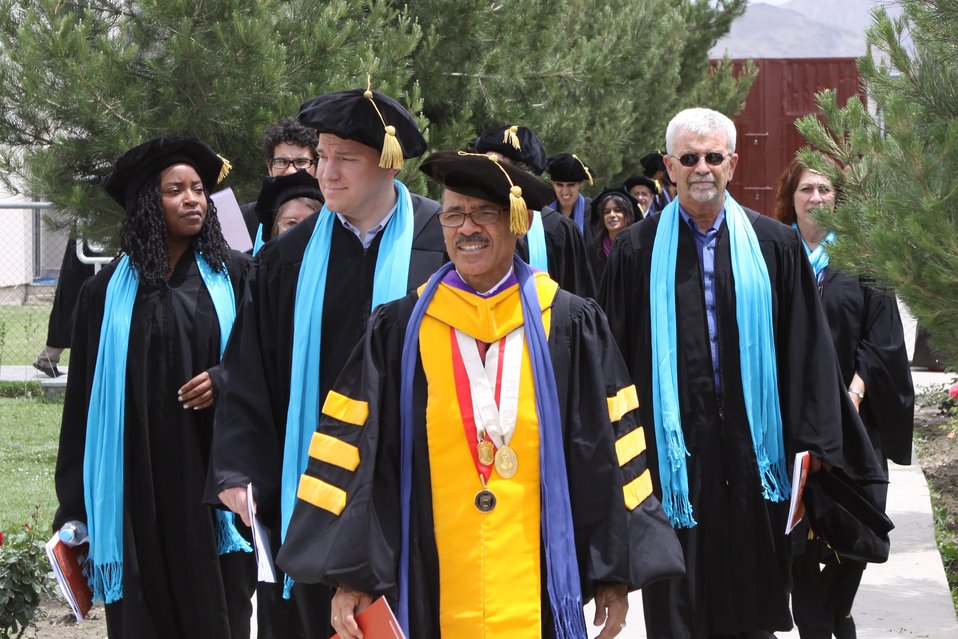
100526 AUAF Graduation 332